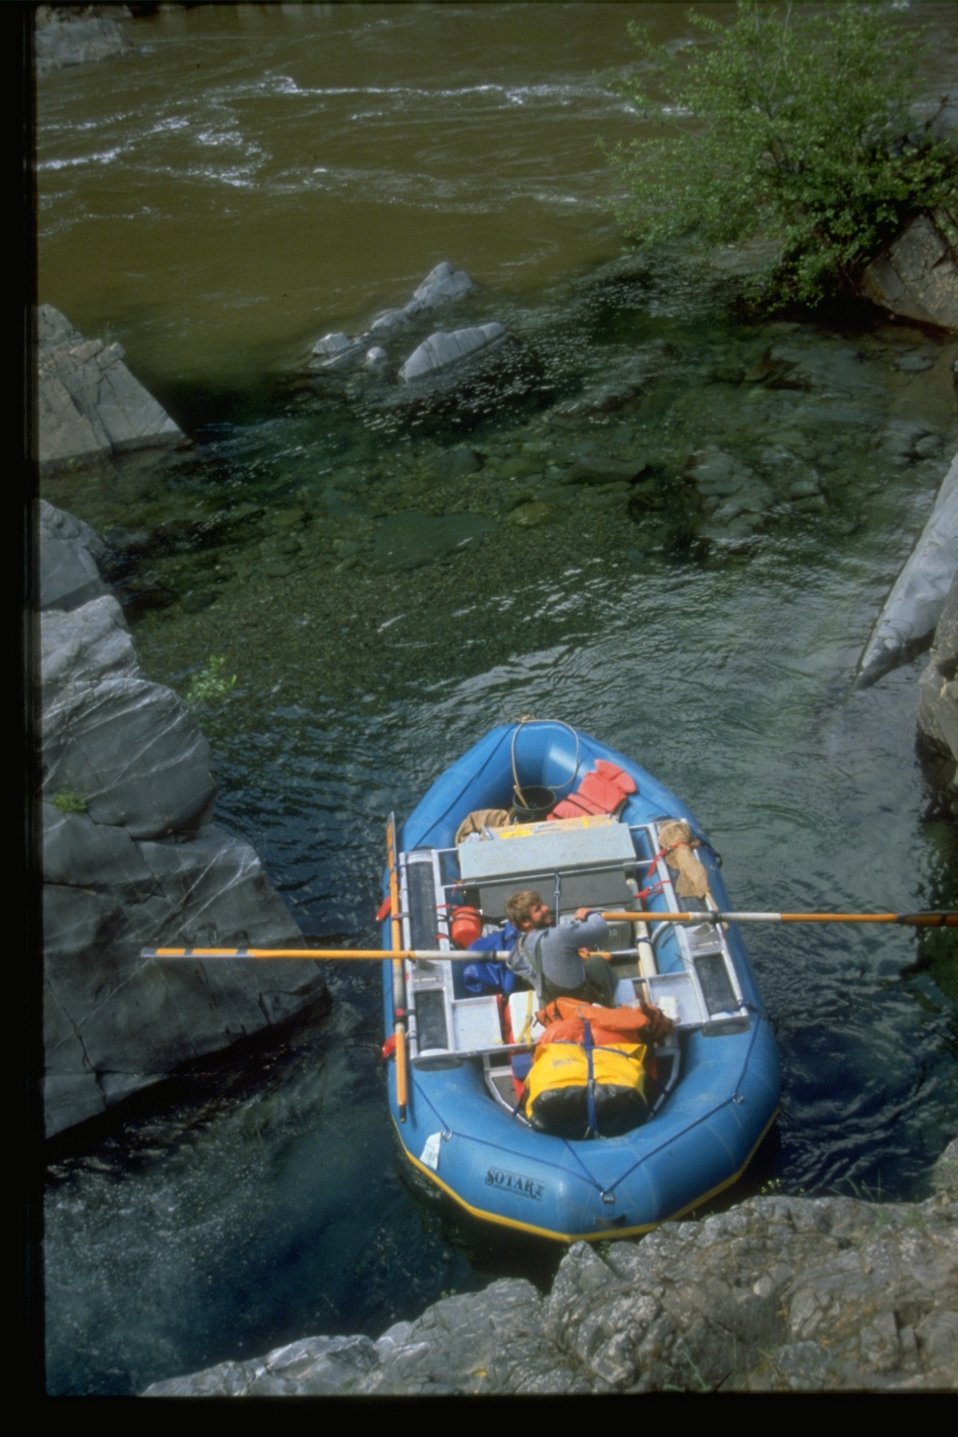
Rafting in Big Windy Creek.